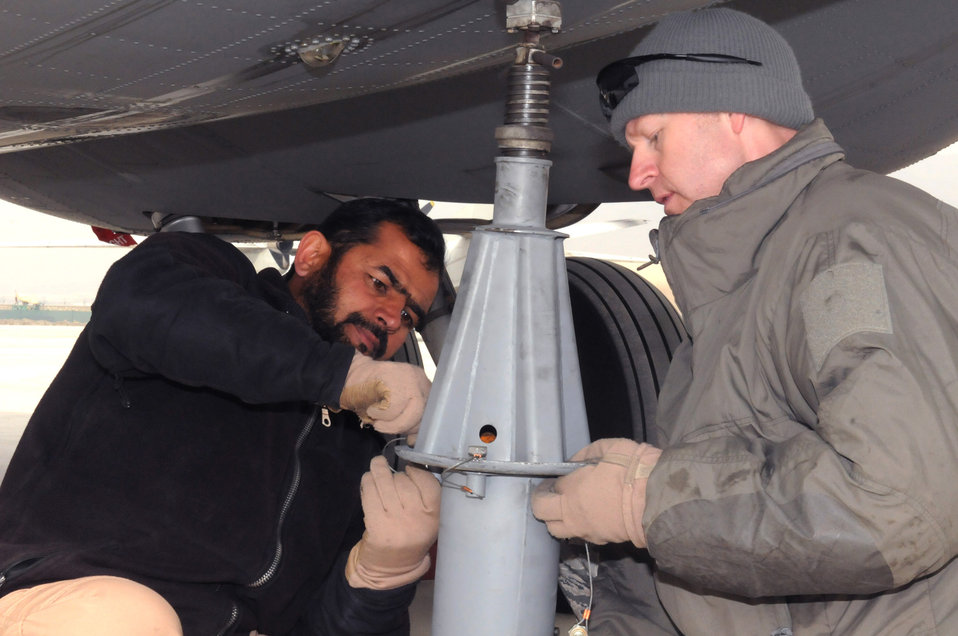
AAF loadmasters

Master Sgt. Chris Neufeld helps an Afghan air force loadmaster-in-training apply a jack to a C-27 Spartan during an off-load mission at the Afghan air force base Feb. 21, 2011, in Kabul. Sergeant Nuefeld is a NATO Air Training Command-Afghanistan C-27 loadmaster adviser with the 538th Air Expeditionary Advisory Squadron.